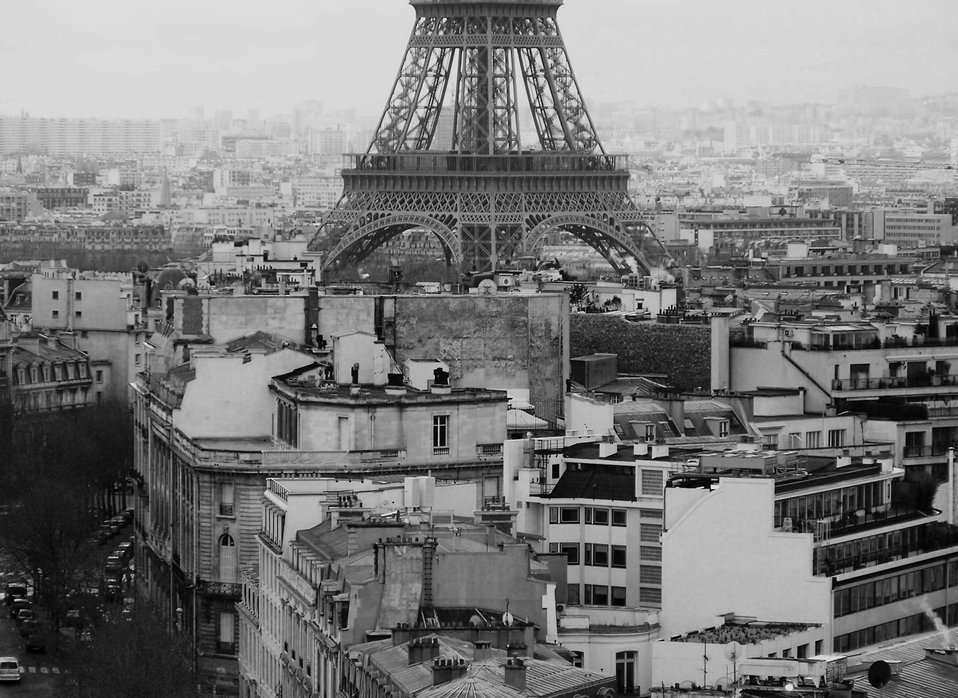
Paris roof tops

A photograph of city rooftops and the eiffel tower.